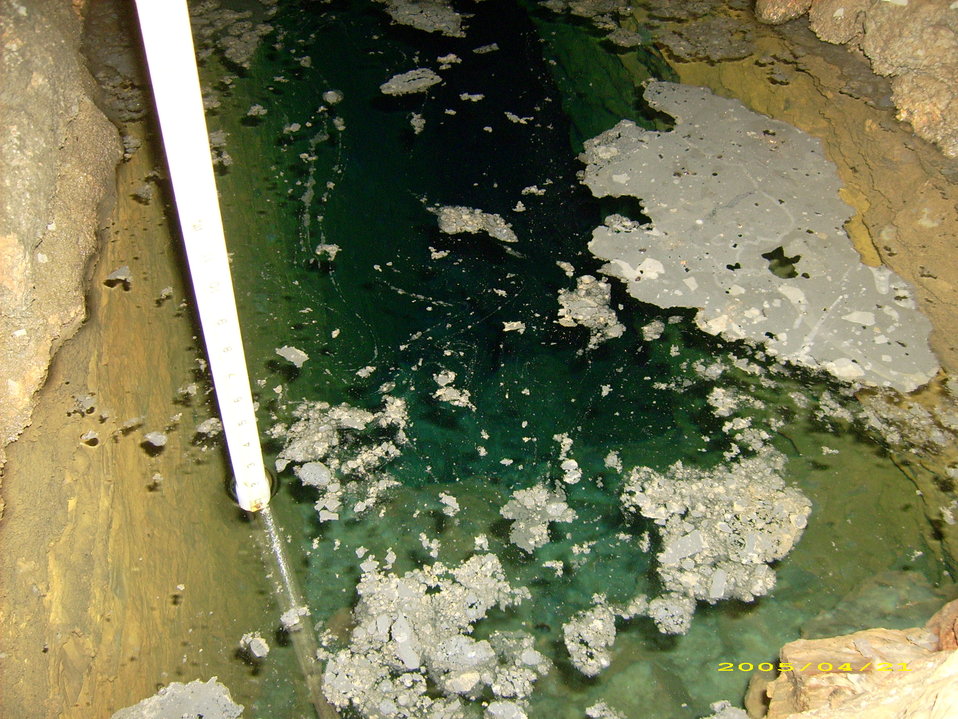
Calcite Rafts in Madison Saltpeter Cave

Calcite rafts on water found within Madison Satpeter Cave.